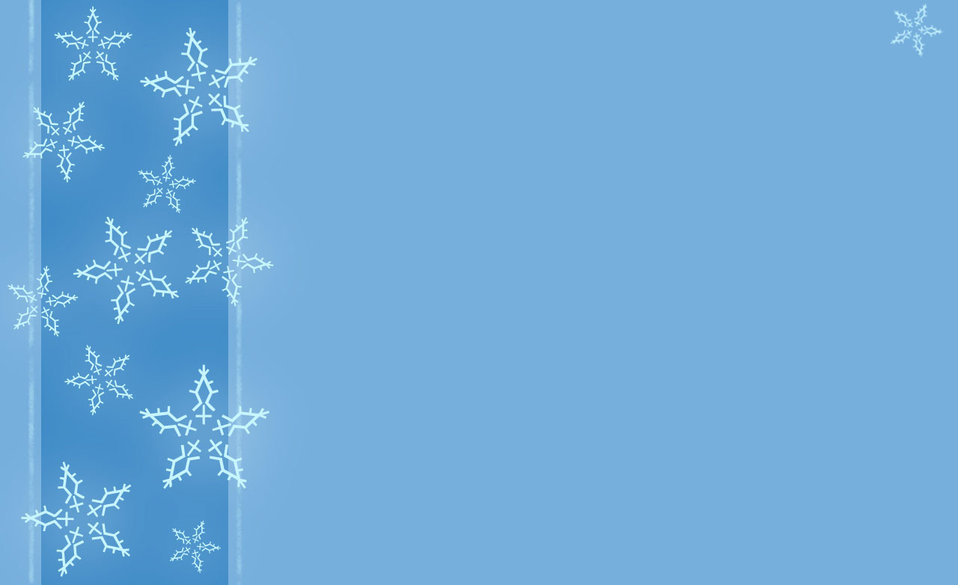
Snowflakes

Winter background picture with snowflakes.